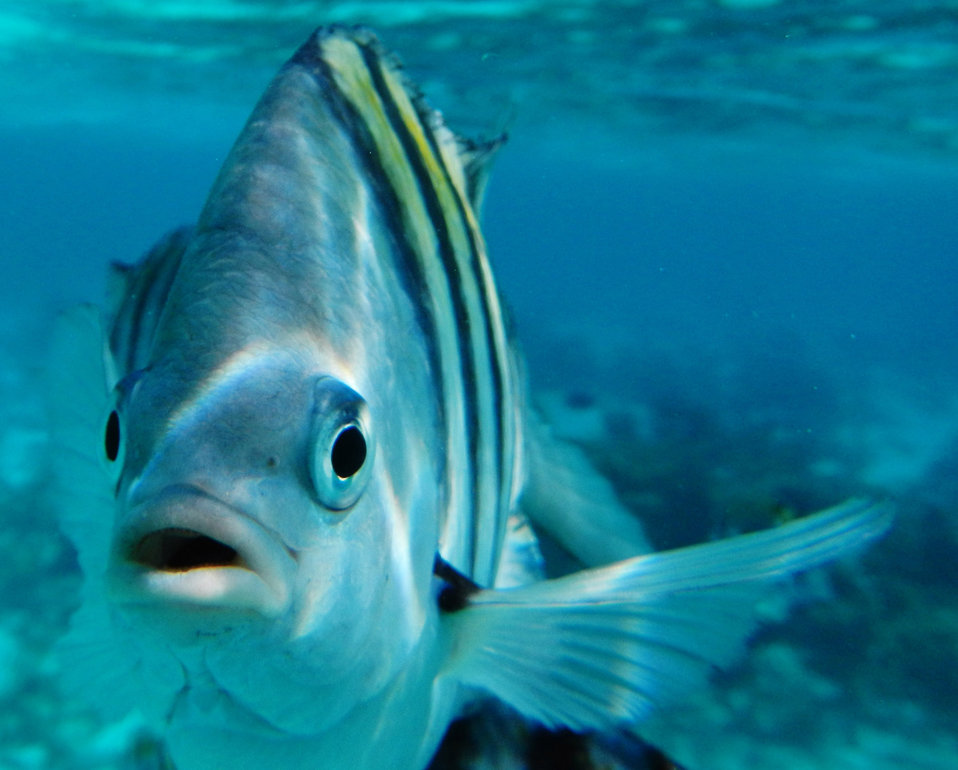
Ohhh, what's this?

I took this sergeant major in grand cayman.